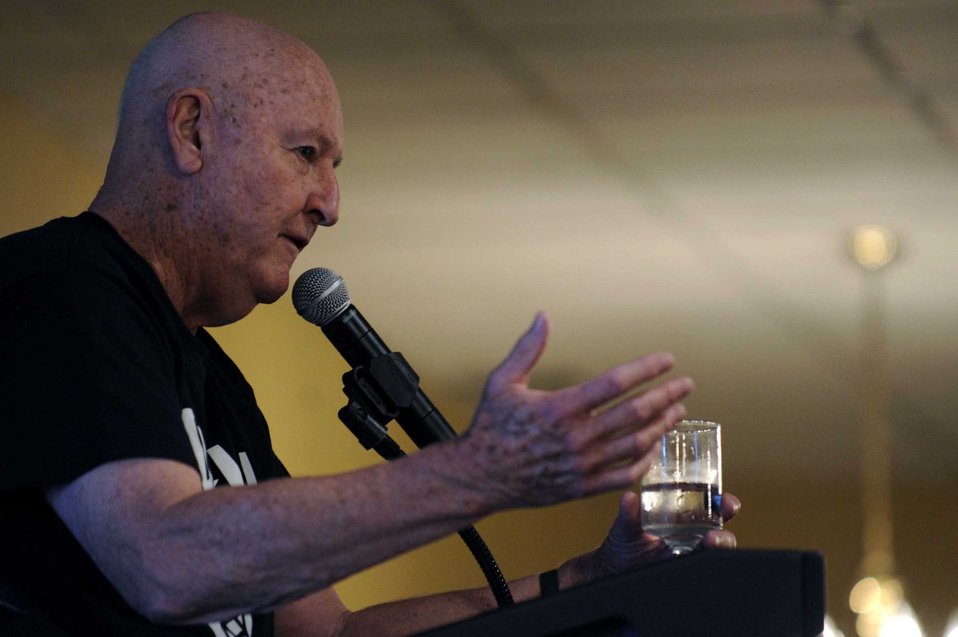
Air Combat Command honors POW/MIA Remembrance Day

Retired Air Force Lt. Col. John Yuill speaks during the Prisoners of War/Missing in Action Remembrance Day luncheon at Ellsworth Air Force Base, S.D., Sept. 18, 2009. Colonel Yuill flew missions over Vietnam from April 1972 until his plane was shot down Dec. 22, 1972, during the Linebacker II campaign. He was captured by enemy forces and held captive until released March 29, 1973.